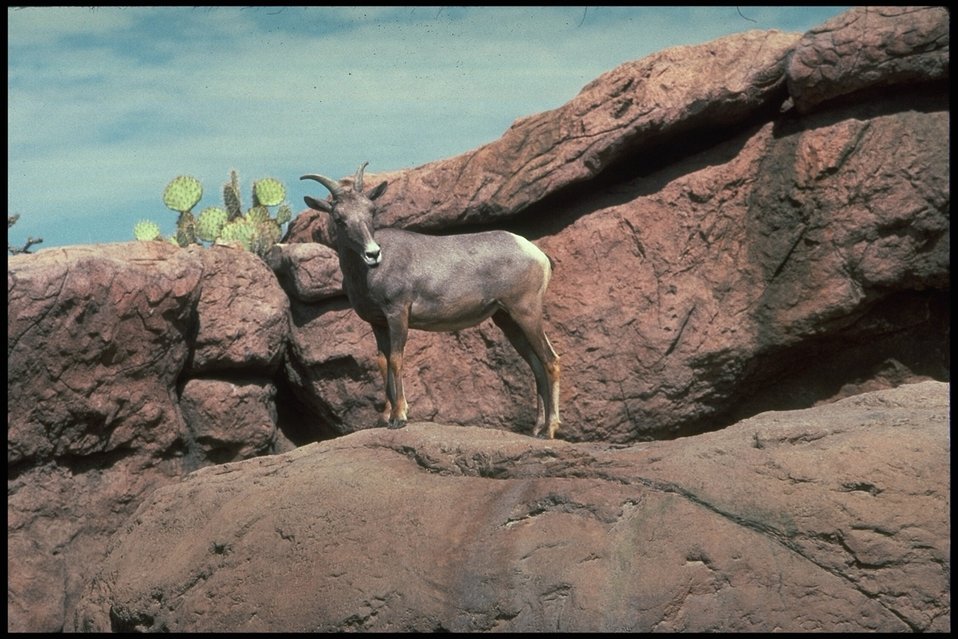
Arizona Wildlife.